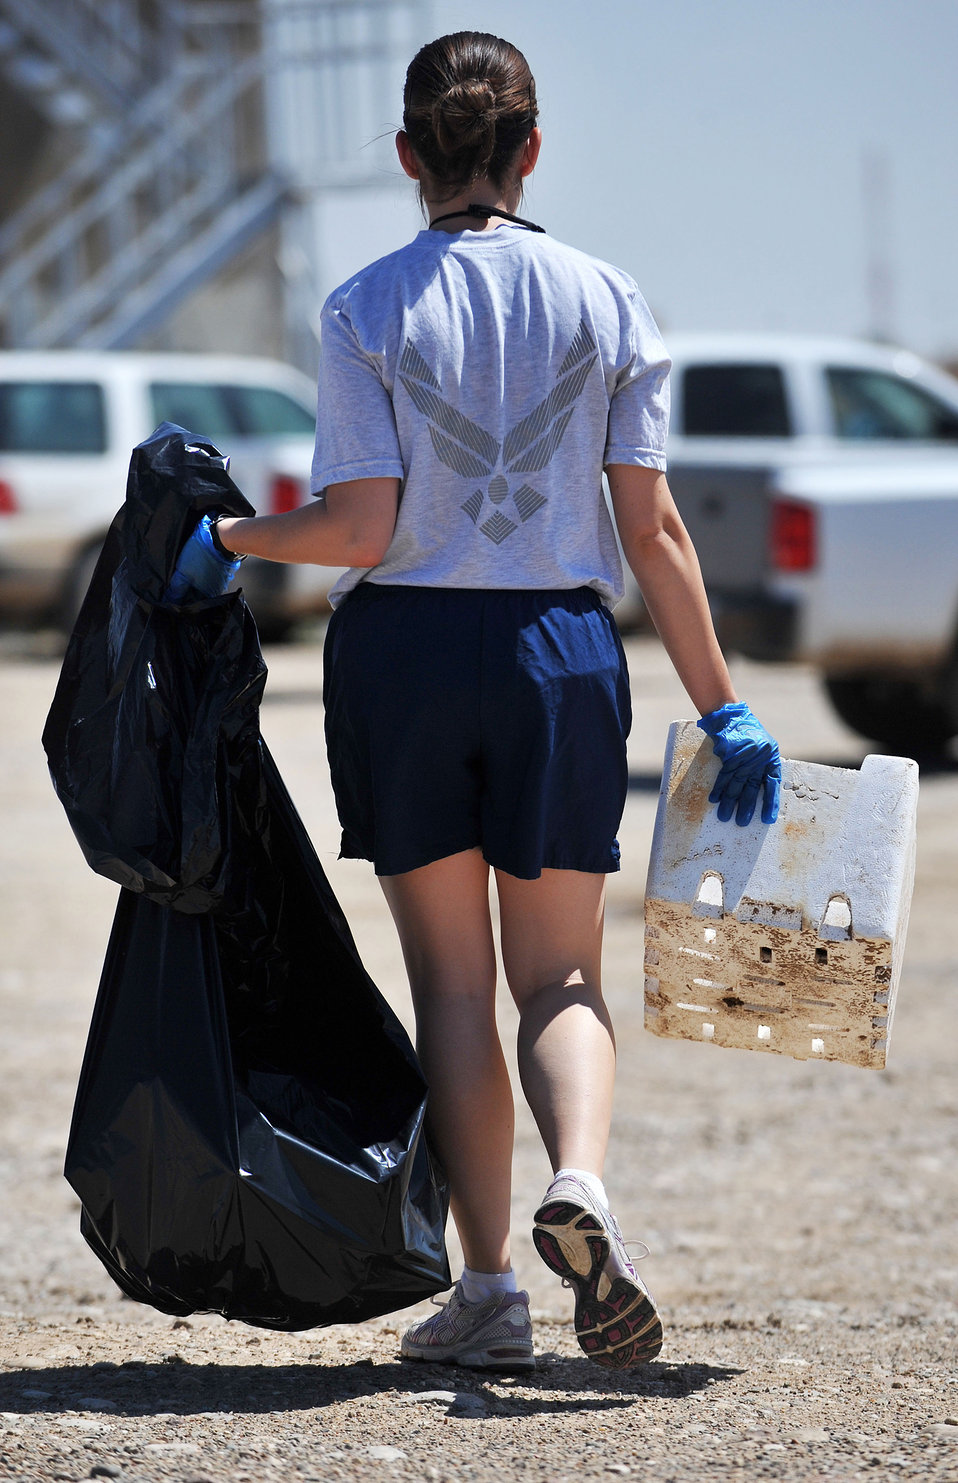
Airmen help make Iraq a little greener

Staff Sgt. Ashley Jamison carries trash picked up from the side of the roads, April 24, 2011, at Contingency Operating Site Warrior, Iraq. Sergeant Jamison is a 321st Expeditionary Operation Support Squadron vehicle maintenance management analyst.